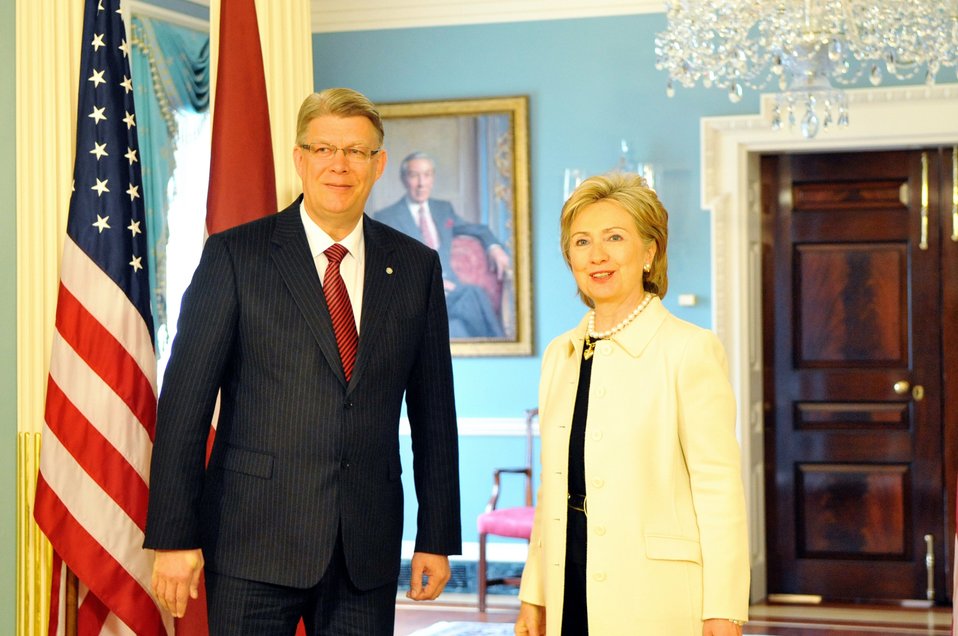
Secretary Clinton Meets With Latvian President

U.S. Secretary of State Hillary Rodham Clinton hosts a bilateral meeting with Latvian President Valdis Zatlers in the Treaty Room of the U.S. Department of State in Washington, DC May 14, 2009.